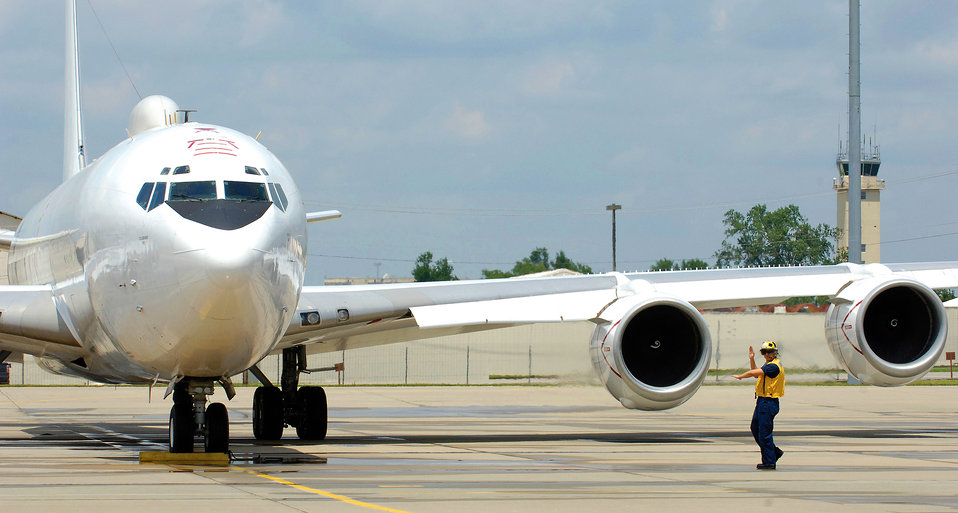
OC-ALC to refurbish Navy E-6 aircraft

566th Aircraft Maintenance Squadron personnel assigned to the Oklahoma City Air Logistics Center at Tinker Air Force Base, Okla., are scheduled to begin work on the service life extension program for the Navy's fleet of E-6B Mercury aircraft flown by Strategic Communications Wing One here.